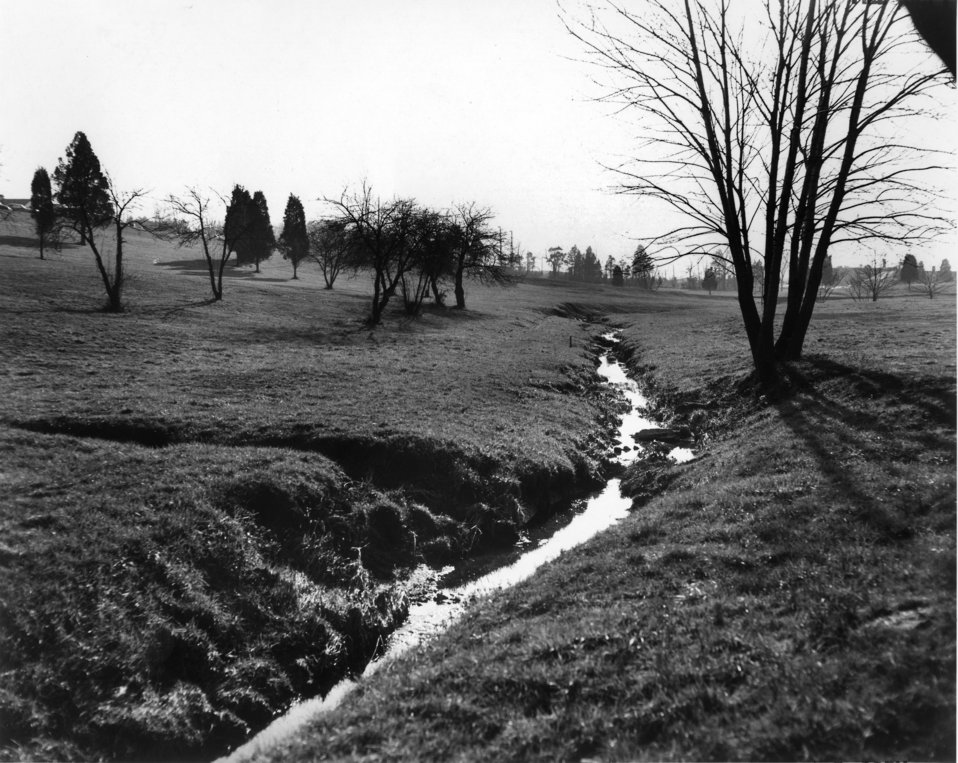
Proposed Site for New Adm. Bldg. Oak Ridge

65-55 DOE photo by Ed Westcott 2-15-1965 Oak Ridge Tennessee